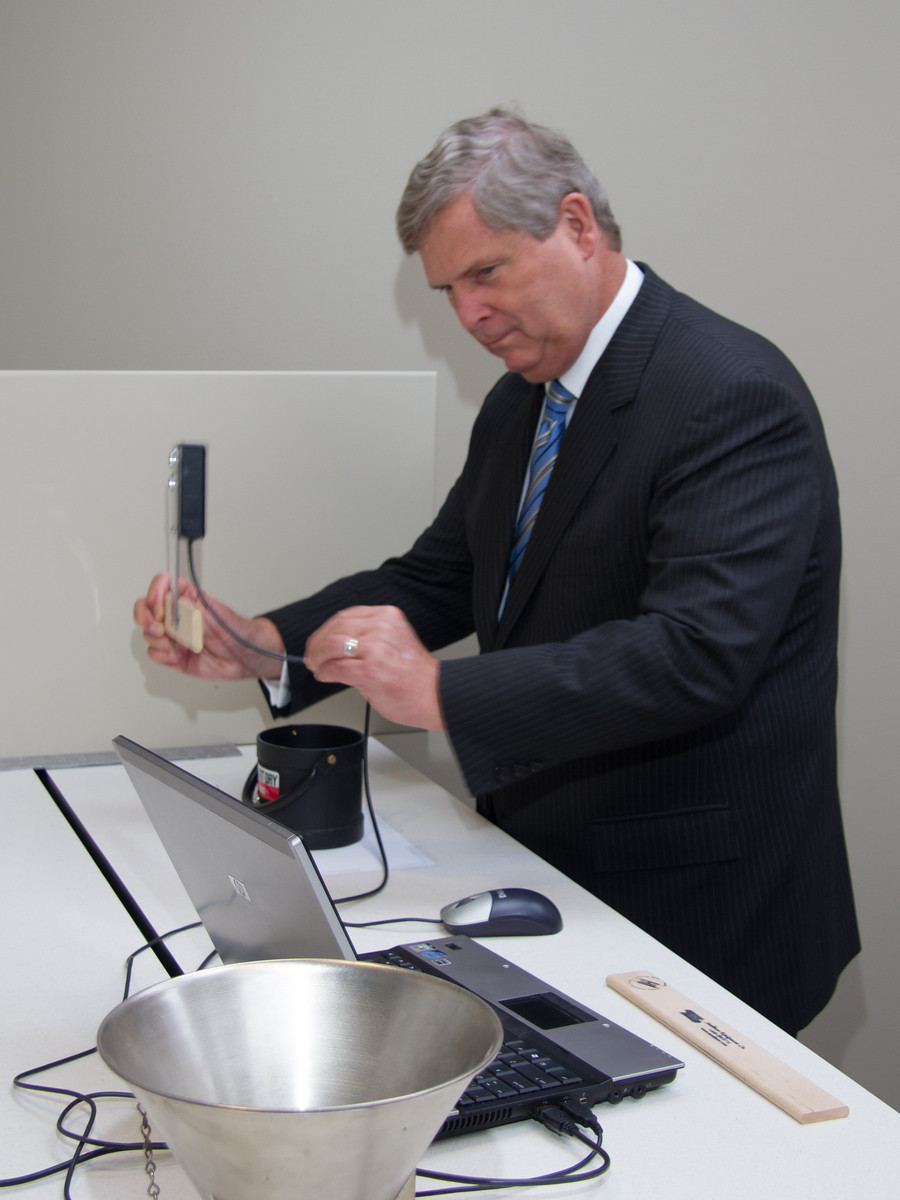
Agriculture Secretary Tom Vilsak tests his skill at performing the standard grain test weight strike off motion using the Grain Inspection, Packers and Stockyards Administration (GIPSA) newly developed Test Weight Trainer device in Kansas City, MO, on Wednesday, Oct. 23, 2013.